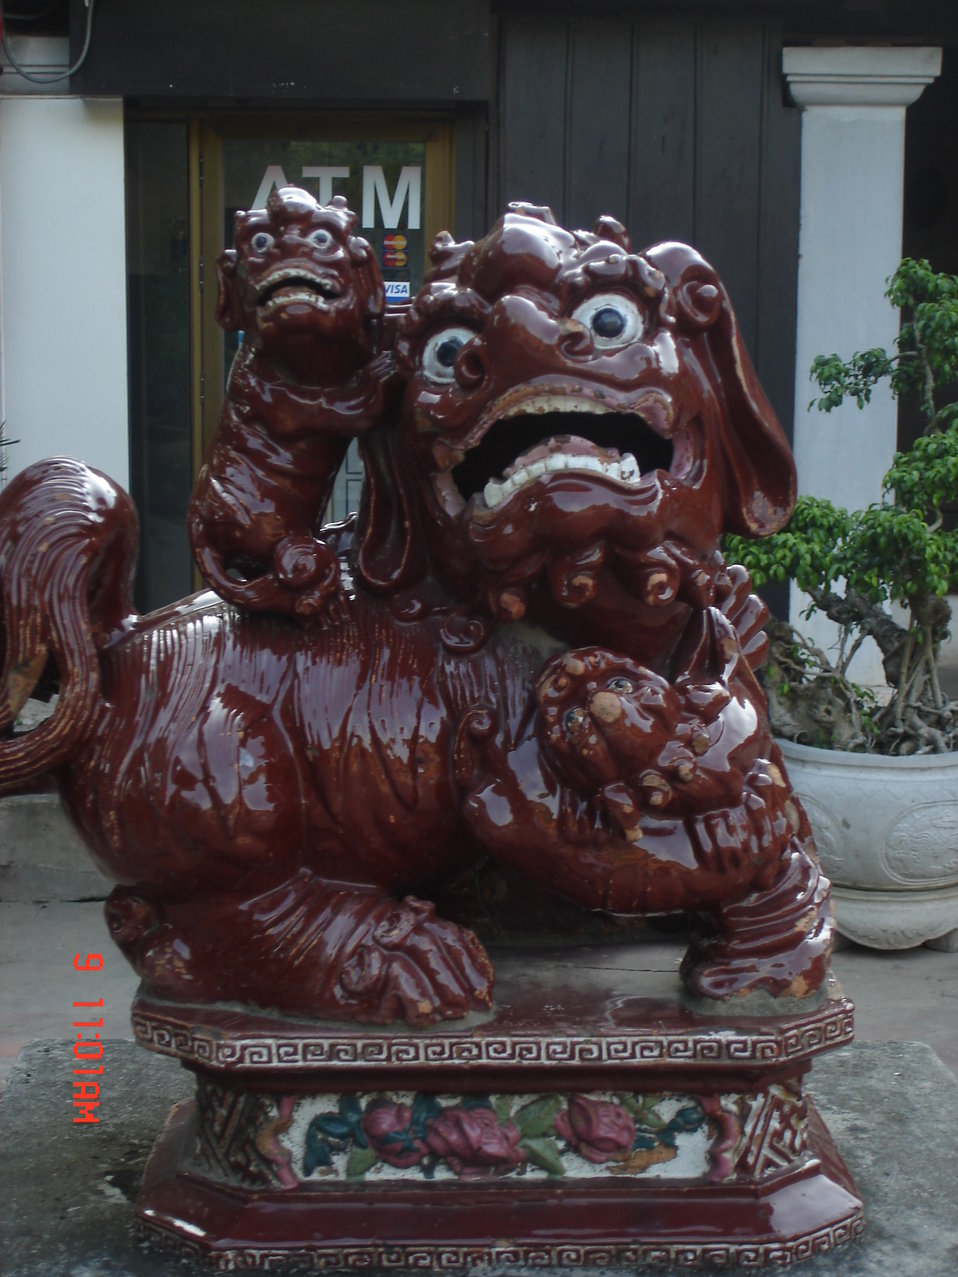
Deutsch: Detail aus dem 4. Innenhof